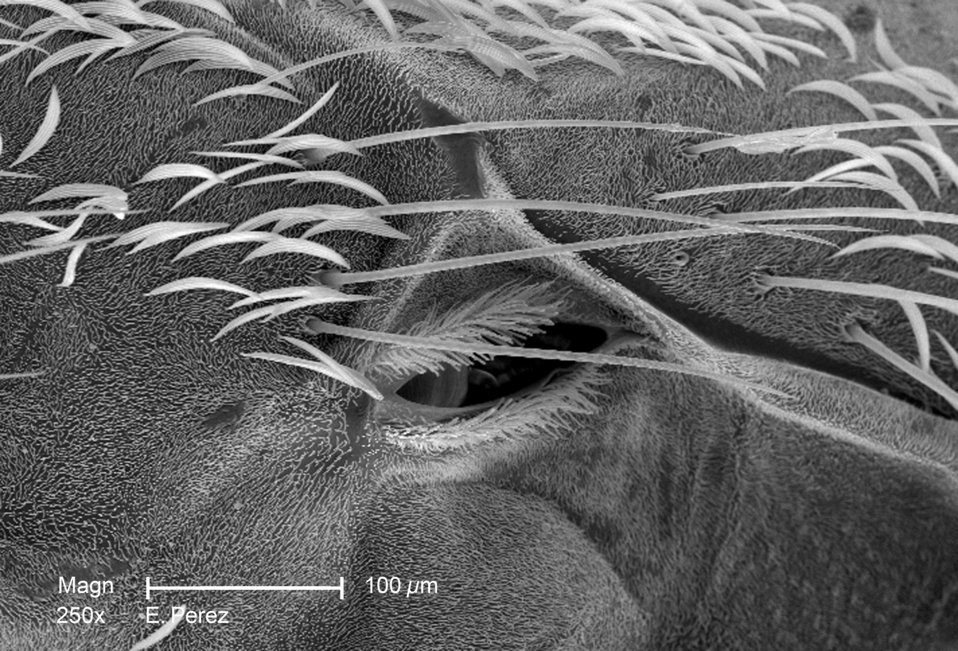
This is the second of four scanning electron micrographs (SEM) that are representative of successively greater magnifications of the thoracic region of an unidentified mosquito discovered in the suburbs of Decatur, Georgia. At a magnification 2.5X greater than PHIL 10519, this SEM depicts the morphology of this region focusing on the anatomical feature known as the 'spiracle', which is one of two orifices located on the thorax through which the insect breaths. Note that PHIL 10521 and 10522 are even greater magnifications of the spiracle. There are eight additional spiracles located on the abdominal region as well. You'll also note the presence of numerous setae, or sensorial 'hairs', as well as many light-weight scales, all of which are composed of the same material as the exoskeleton itself, a substance known as chitin.